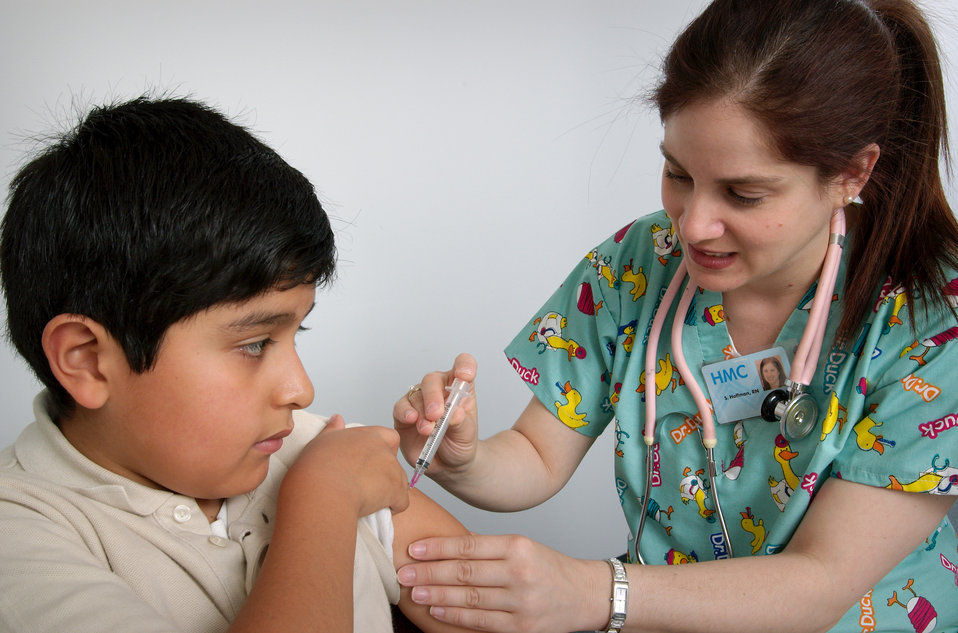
The nurse depicted in this 2006 image was administering an intramuscular vaccination in the left shoulder muscle to a young boy. The nurse immobilized the boy's arm by holding it tightly, while the boy held up his sleeve in order to facilitate the procedure.Why are childhood vaccines so important?